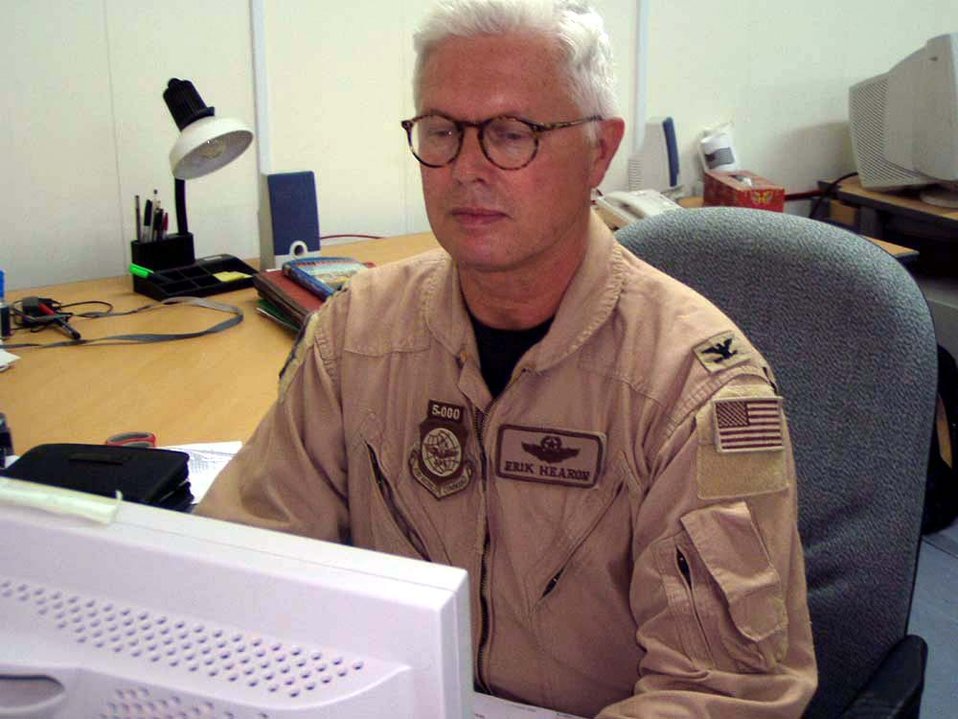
Colonel help leukemia patient

OPERATION IRAQI FREEDOM -- Col. Erik Hearon works at his computer at a forward-deployed location supporting Operation Iraqi Freedom. He was recently selected by the Department of Defense Marrow Donor Program to donate bone marrow to a leukemia patient. Hearon directs the regional air movement and control center here.